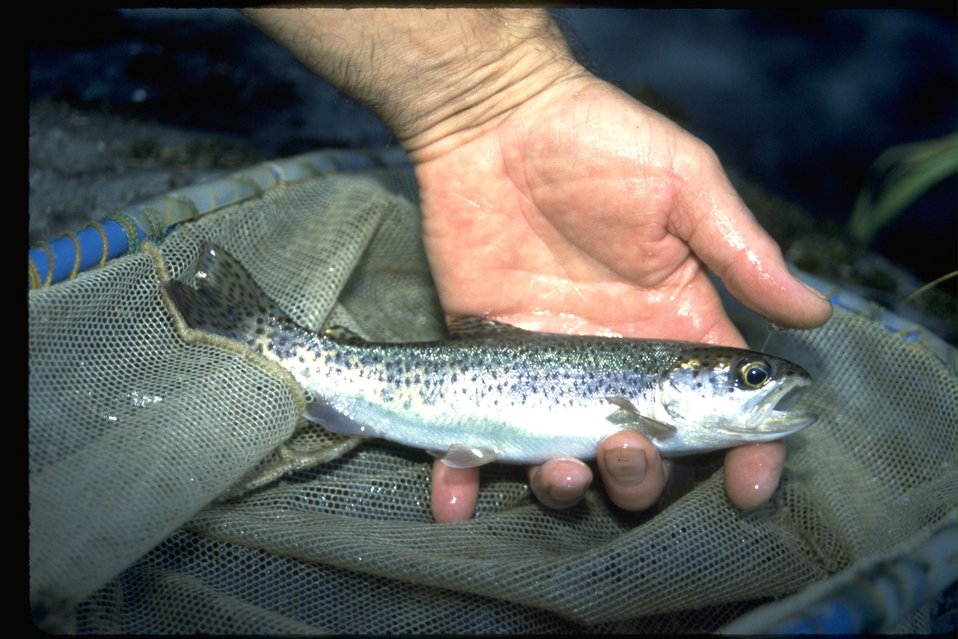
Macro shot of rainbow trout.